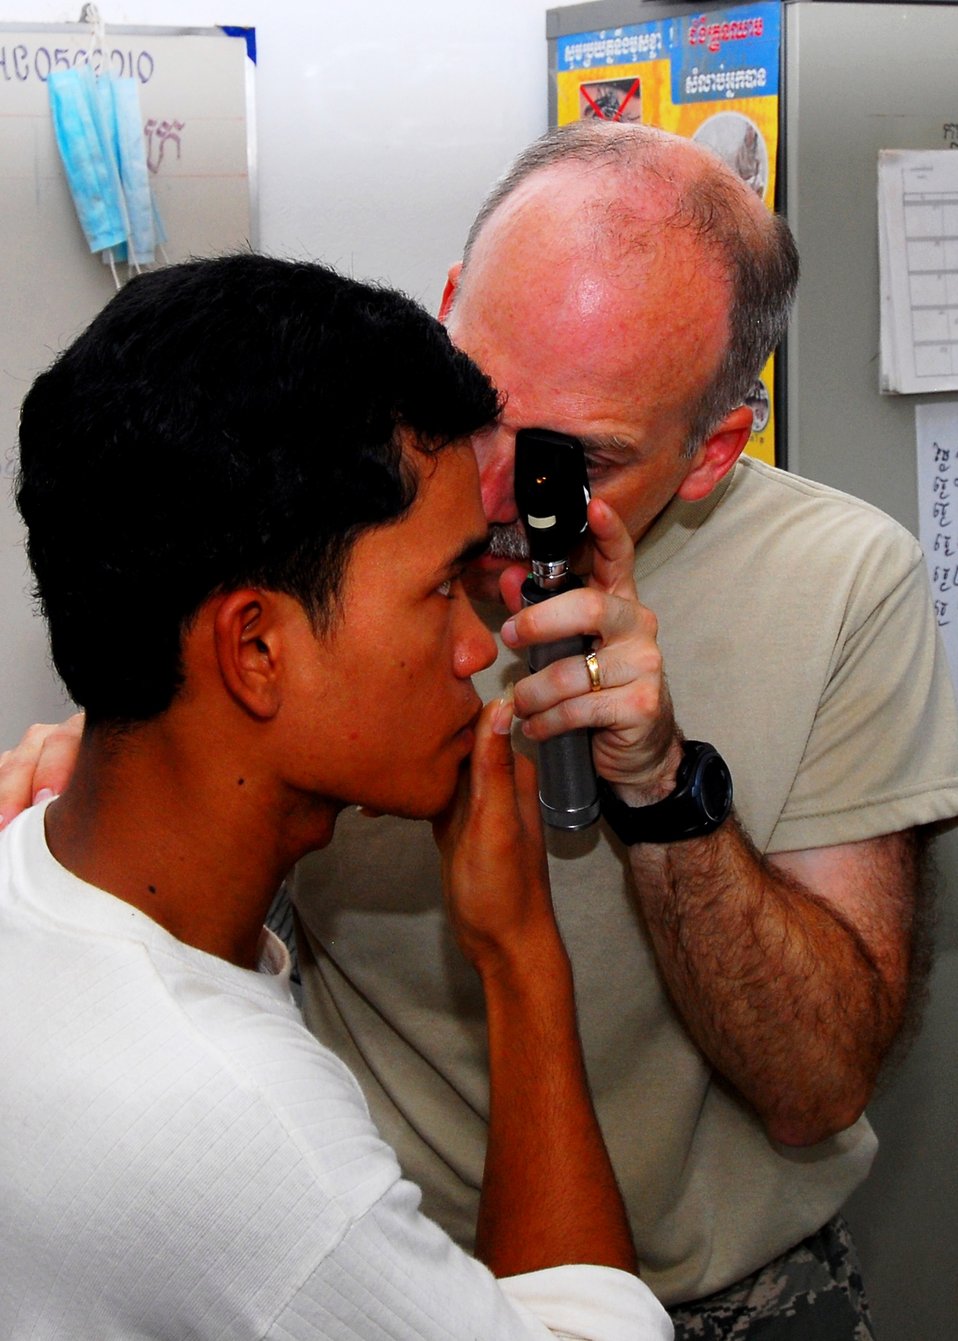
U.S. Air Force Major (Dr.) Michael Stevens examines a patient’s eye during a medical community service event at Veal Ang Popel Clinic, in support of Pacific Partnership 2010, while the Military Sealift Command hospital ship USNS Mercy (T-AH 19) is in Kampong Spue, Cambodia, on June 25, 2010.